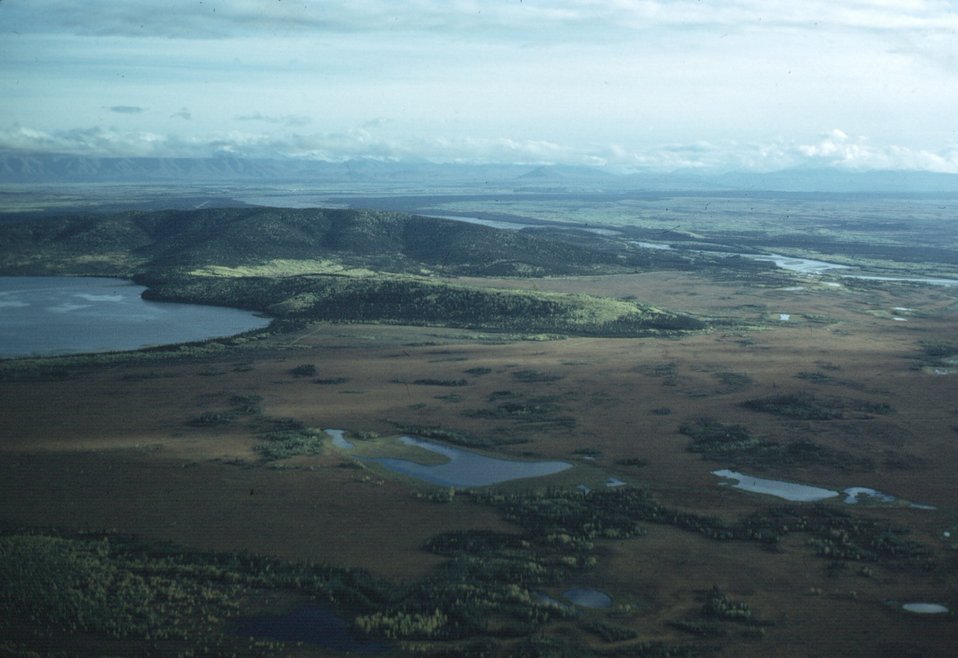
Aerial shot of fall colors near Big Delta, interior Alaska